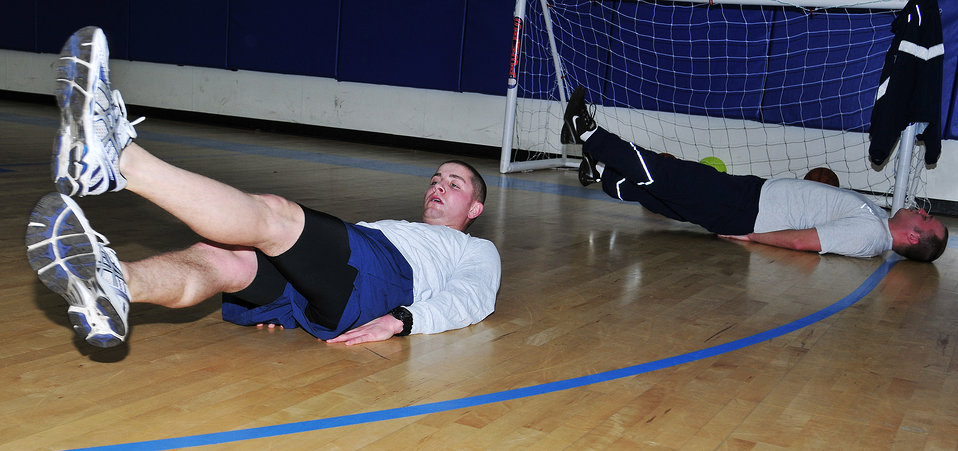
Kick it

Senior Airman Steven Evans, (left) the 48th Security Forces Squadron physical training leader, scissor-kicks along with his fellow 48th SFS members during their workout at Royal Air Force Lakenheath, England, Jan. 12, 2012. Fitness has been an integral part of Evans' life since he was a child.